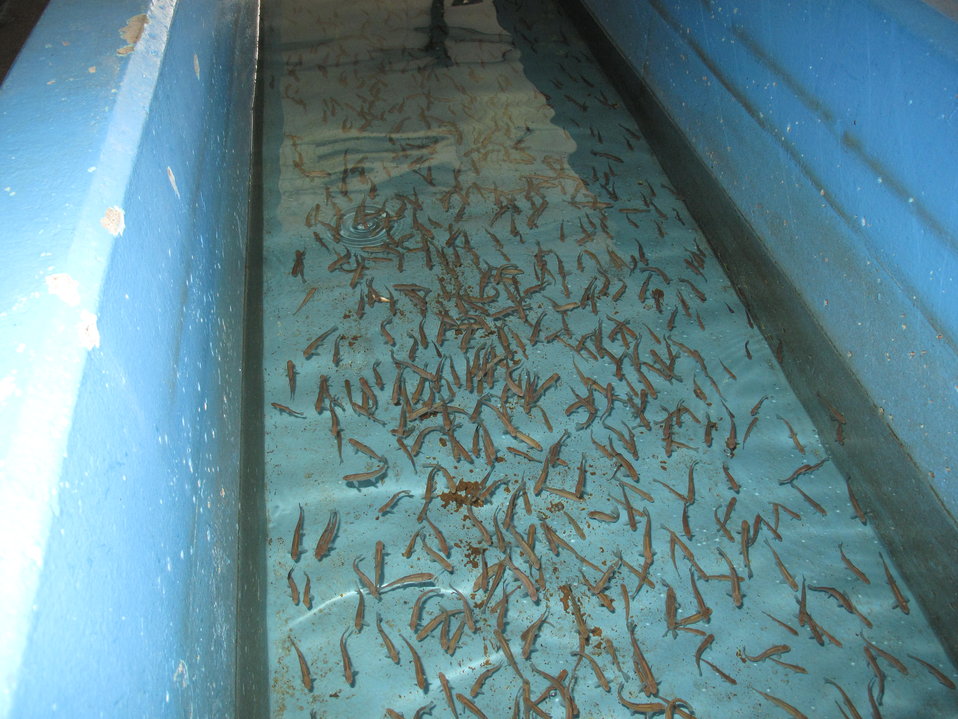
Leadville National Fish Hatchery

1 year old cutthroat trout.